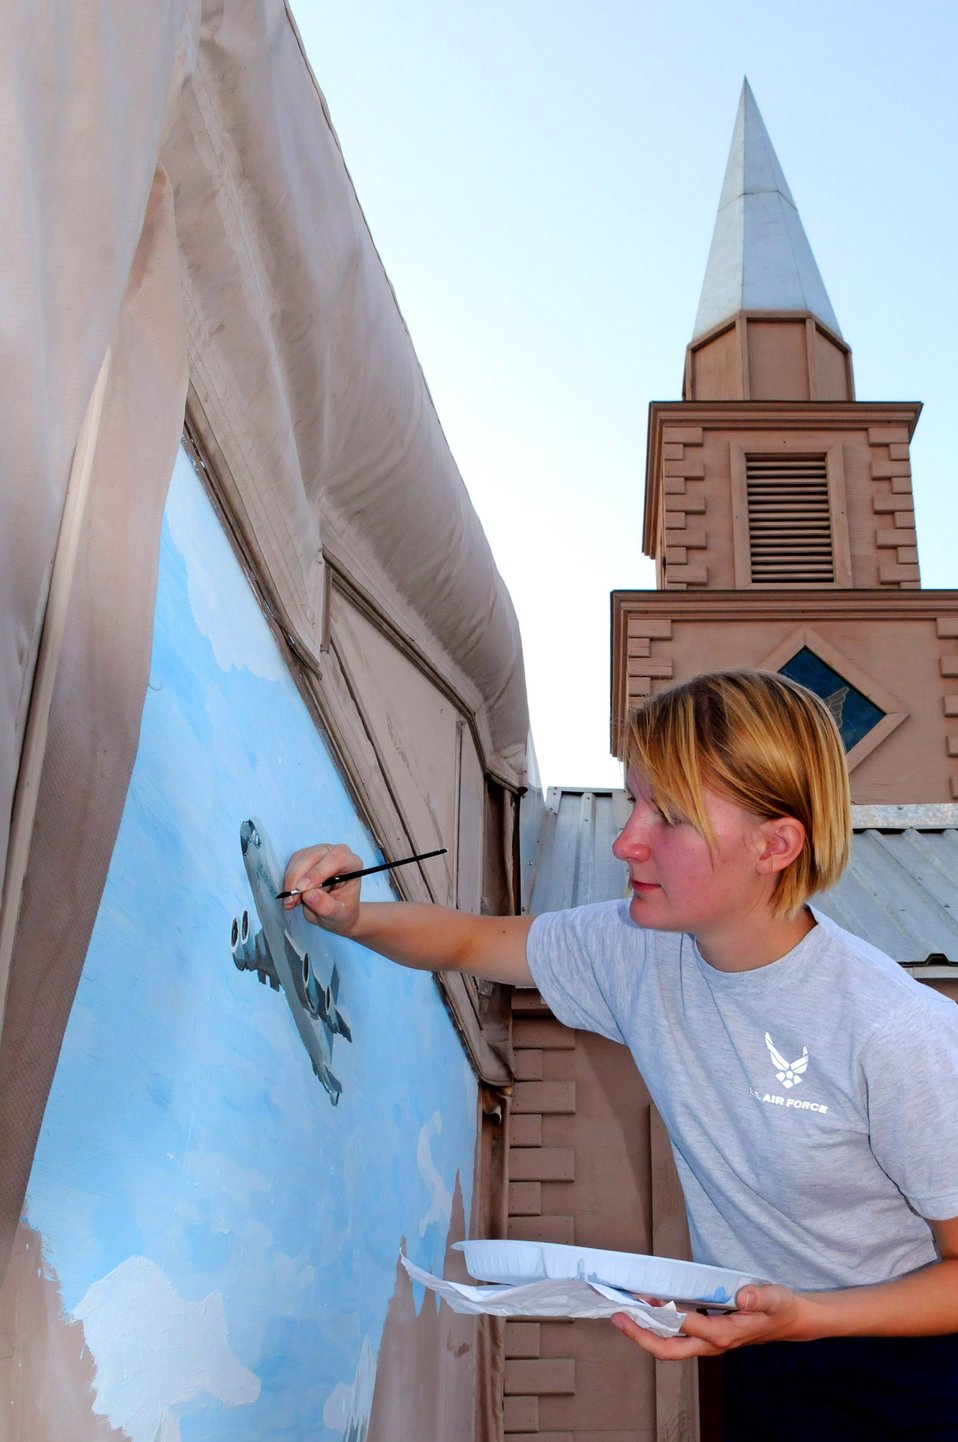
More Air Force blue here

Senior Airman Oleksandra Manko paints a mural Aug. 23 on the chapel walls at Manas Air Base, Kyrgyz Republic. The chapel donates many hours to help the local schools and orphanages in the area. Airman Manko is assigned to the 376th Air Expeditionary Wing.